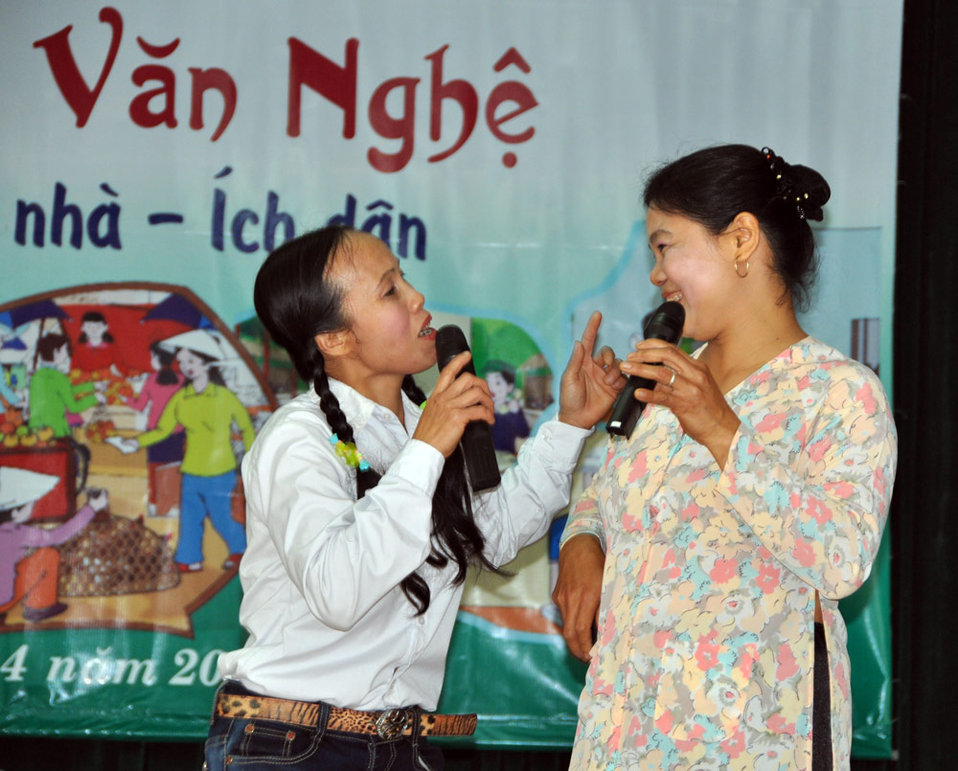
Residents in Vietnam's Tien Ngoai Commune, Duy Tien District, Ha Nam Province, discuss ways to prevent and control avian and pandemic influenza.